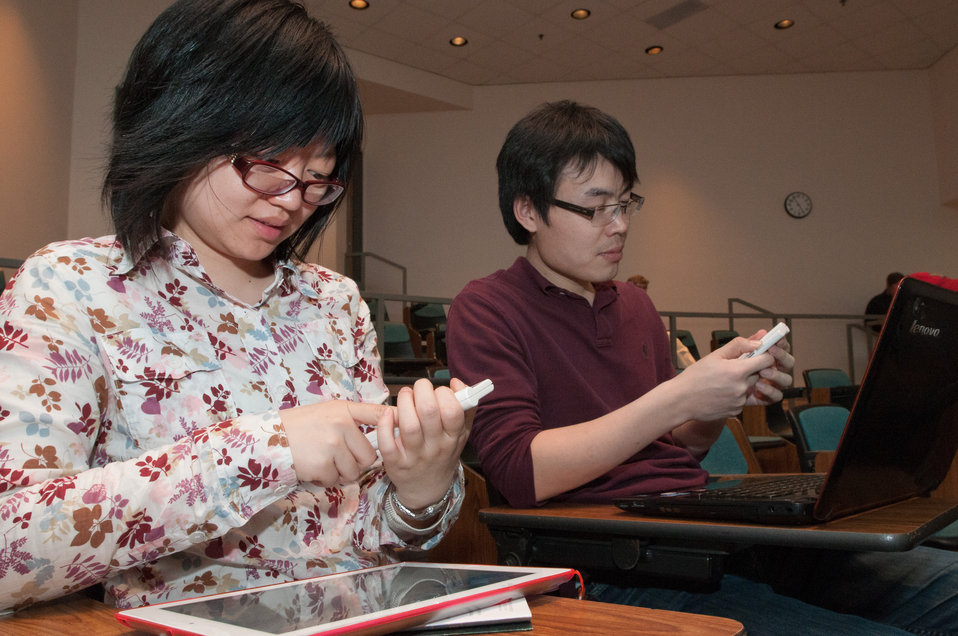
Yu Hu (left), Wenting Ju (right) use wireless polling handsets before U.S. Department of Agriculture (USDA) Deputy Secretary Kathleen Merrigan presented the “Know your Farmer Know your Food” initiative to students and faculty at the Animal Sciences / Agricultural Engineering Building at the University of Maryland, in College Park, MD, on Thursday, April 7, 2011. Deputy Secretary Merrigan’s interactive presentation utilized wireless polling in the lecture room to present farming and ranching industry questions to the audience who used handheld devices to choose from a list of multiple answers. Their answers were instantly tabulated then Merrigan revealed their top choice on the screen, usually revealing misconceptions about the industries.